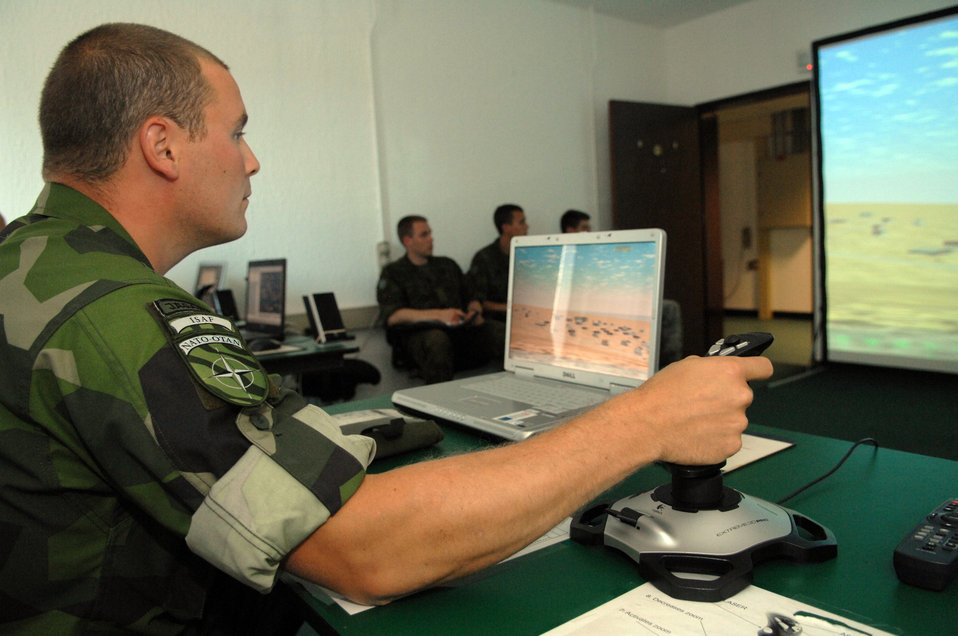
Air ground operations school helps NATO train Estonian, Swedish troops for deployment

Swedish army ranger Capt. Timothy Walsh, a forward air controller, practices using the joystick for the computer simulator used for practicing air strikes during close air support operations at the U.S. Air Forces in Europe Air Ground Operations School. Captain Walsh and two Estonian air force members spent a week in pre-deployment briefings, computer simulation, and field training prior to deployment thanks to the joint efforts of the staff at the USAFE AGOS and the International Security Assistance Force Cell at NATO Allied Air Component Command Headquarters Ramstein Aug. 17- 21.